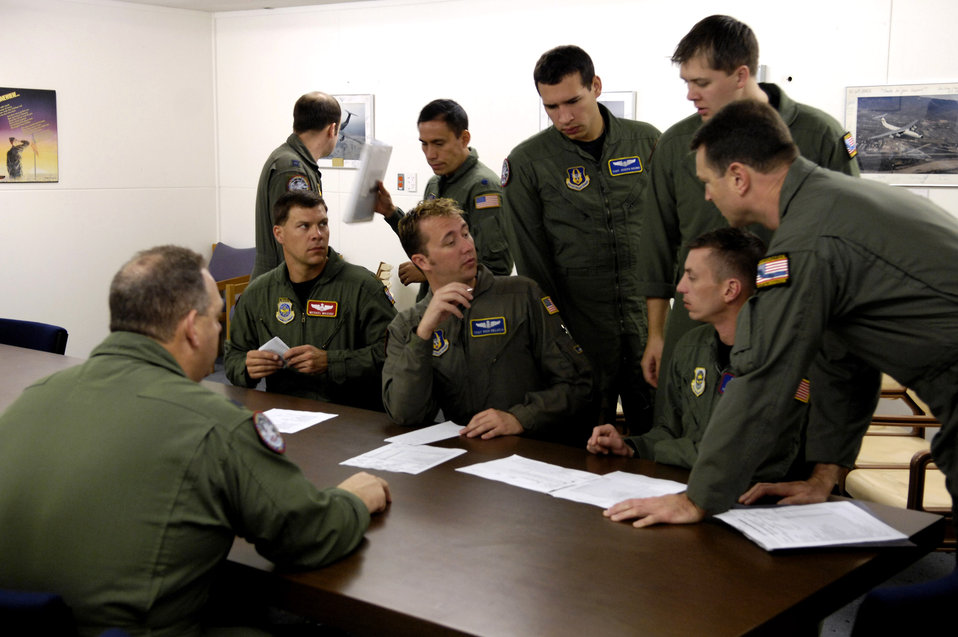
Airmen support Operation Deep Freeze

C-17 Globemaster III crewmembers conduct a pre-flight briefing prior to taking off on an Operation Deep Freeze mission Nov. 22 from Christchurch New Zealand. Reserve and active duty Airmen from McChord Air Force Base, Wash., are at Christchurch to support the 13th Air Force-led Joint Task Force Support Forces Antarctica's Operation Deep Freeze.